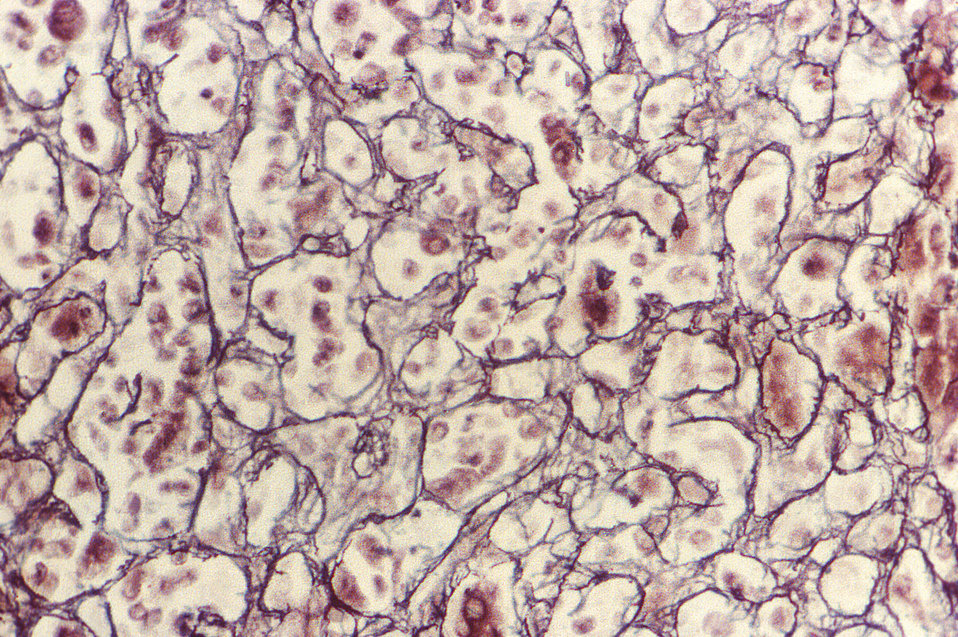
Under a moderately-high magnification of 250X, this Wilder's Reticulin-stained photomicrograph depicts the cytoarchitectural changes found in a liver tissue specimen extracted from a deceased yellow fever patient. This particular view highlights the mid-zone of this lobule, revealing a disassociation in its network of reticular fibers. See PHIL 2176, and 8239, depicting TEMs of the yellow fever virus.